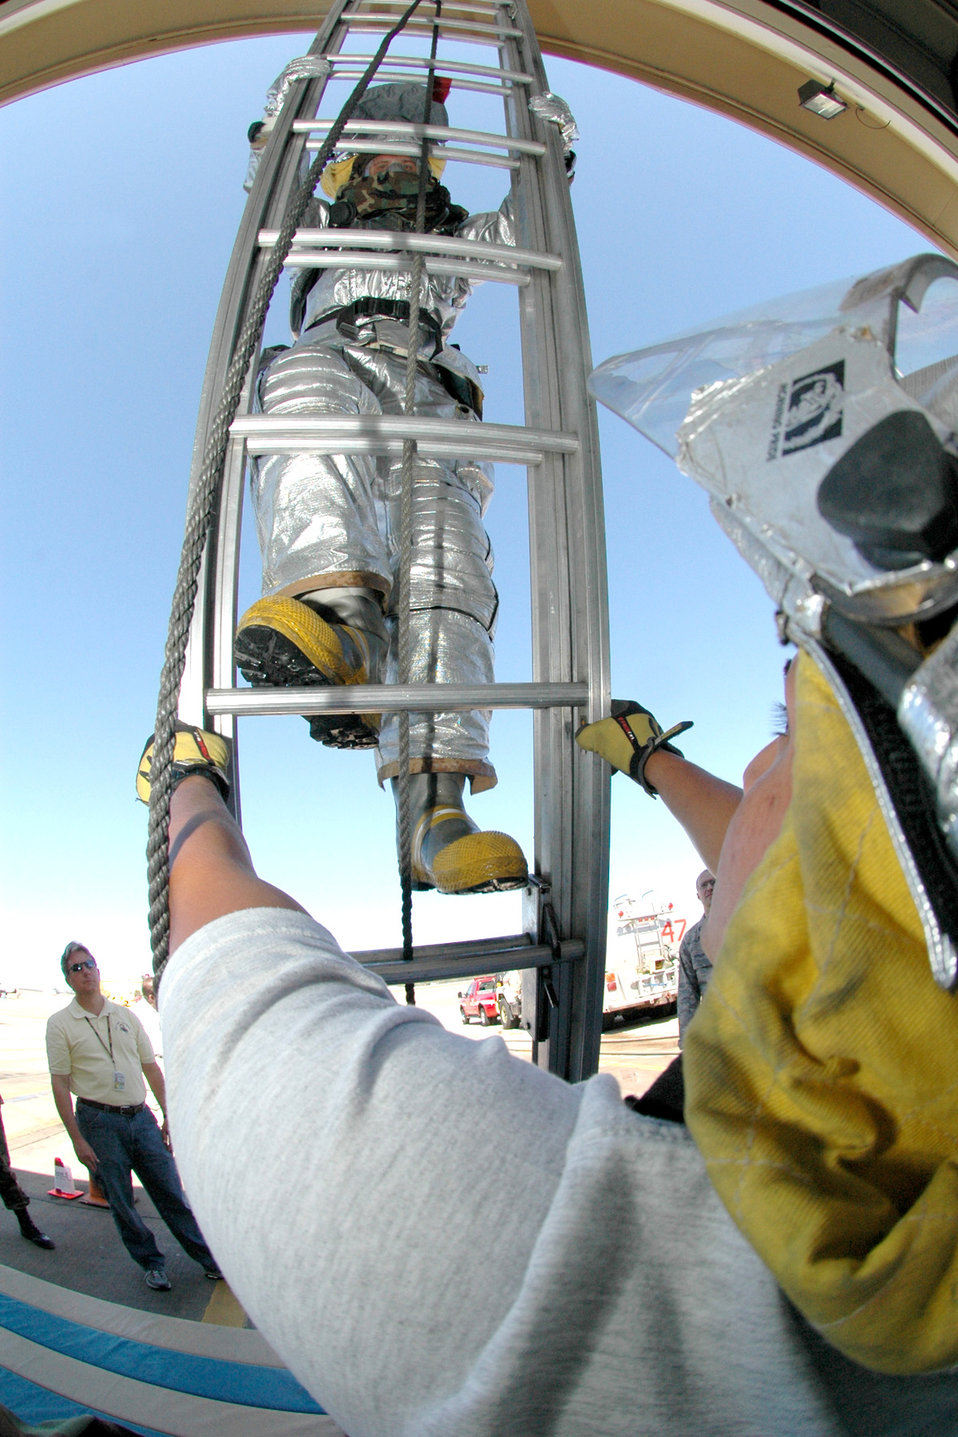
Firefighters test gear for Air Force

Airman 1st Class Cody Ponder climbs a ladder while testing the Air Force's new firefighter protective suits at Eglin Air Force Base, Fla. Airman Ponder is a firefighter with Eglin's 96th Civil Engineer Squadron.